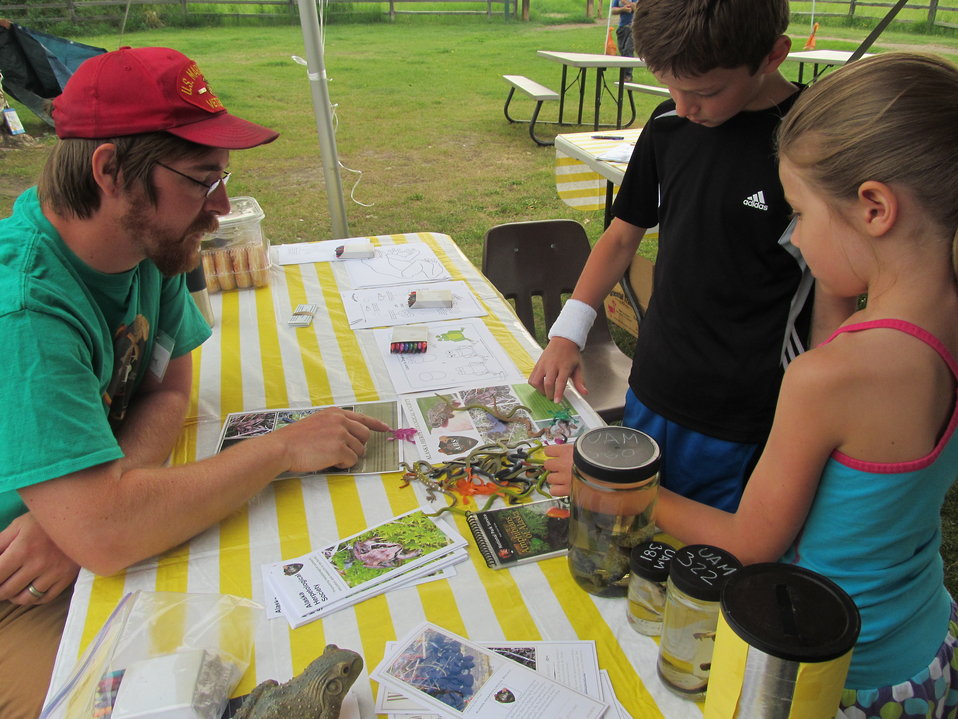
Dragonfly Day 2013

(USFWS)